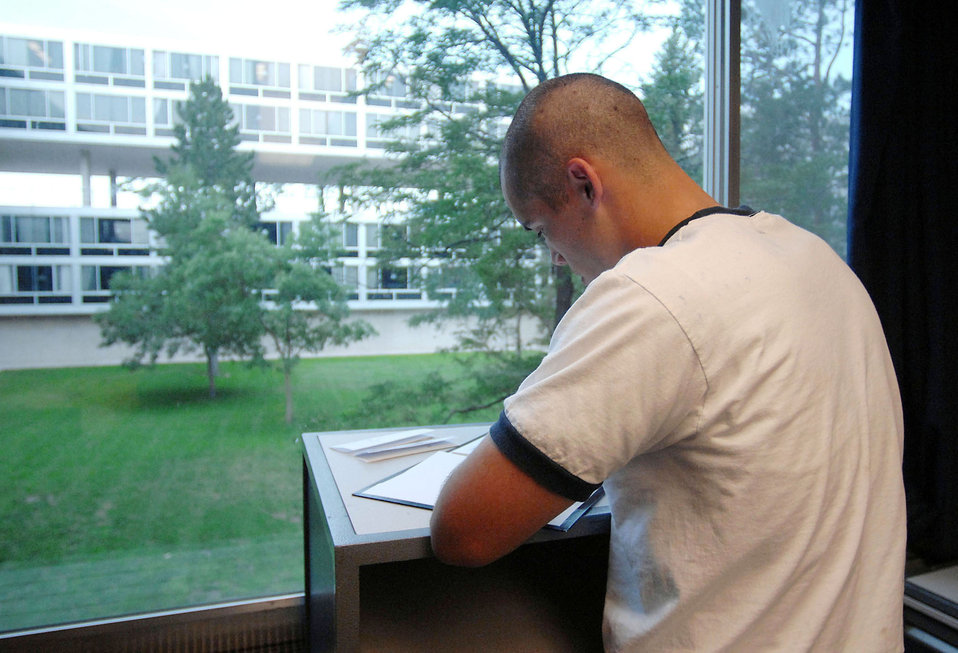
Put to the test

Cadet Steven Michael-Martinez writes a letter home during a brief break before his physical fitness test July 12 at the U.S. Air Force Academy, Colo. The Academy received 9,162 application for this year's class in which only 1,600 were offered appointments. These first-year cadets receive basic discipline and skills to help develop them into officers.